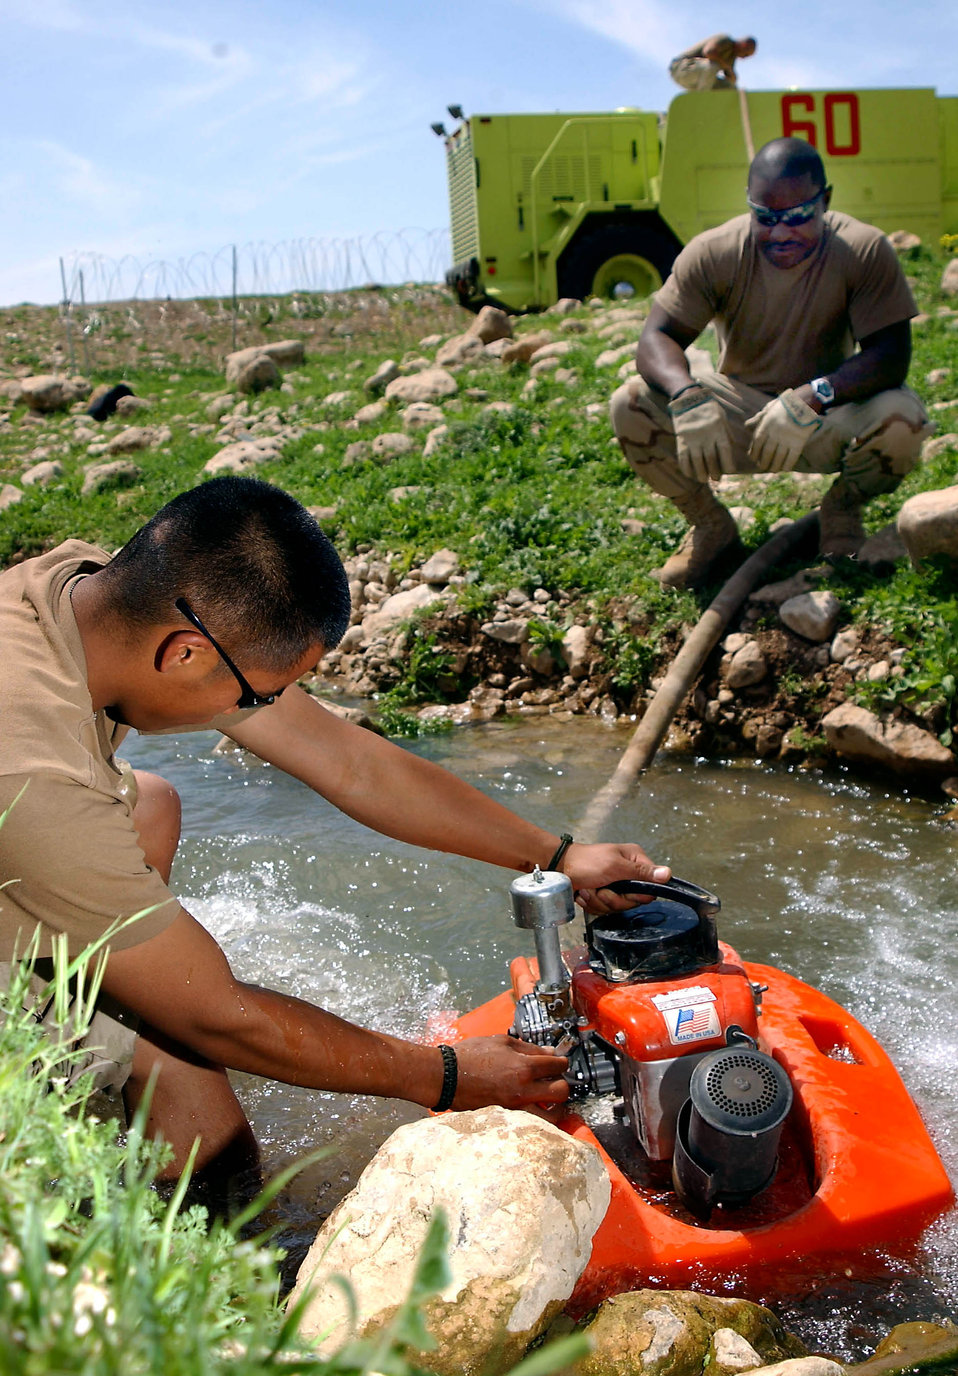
Water world

OPERATION IRAQI FREEDOM -- Airman 1st Class Brandon Olsen (left) and Senior Airman Dwight Moses pump water from a stream near Bashur Airfield, Iraq, to fill their P-19 fire truck. The firefighters are from a host of bases, but attached to the 86th Expeditionary Contingency Response Group. They make several trips a week to the stream to get water for the airfield.